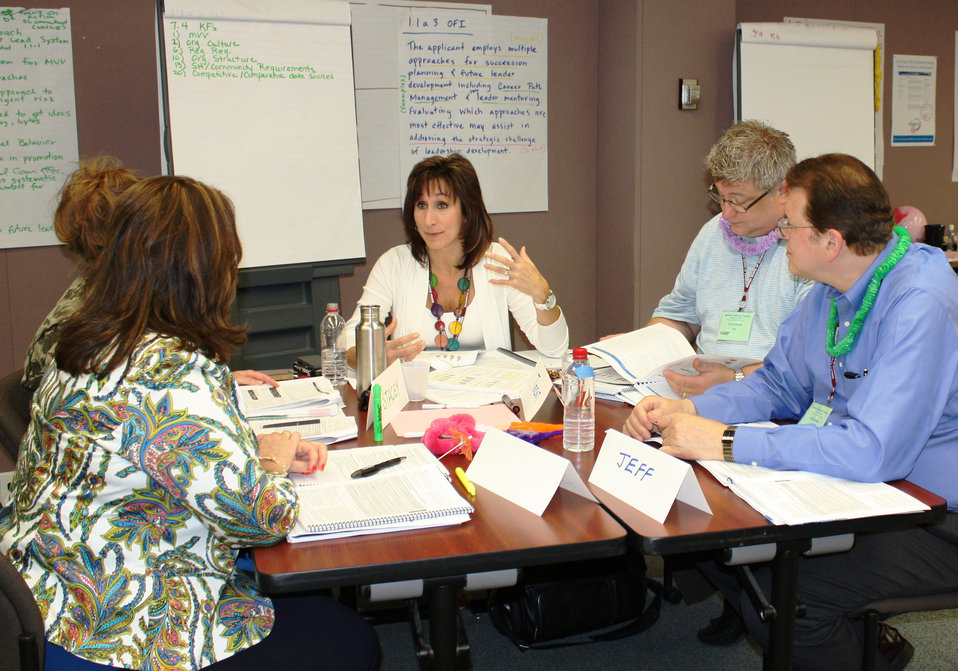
Baldrige Examiner Training

Performance excellence experts participate in a group exercise during their training for the 2013 Malcolm Baldrige National Quality Award Board of Examiners.